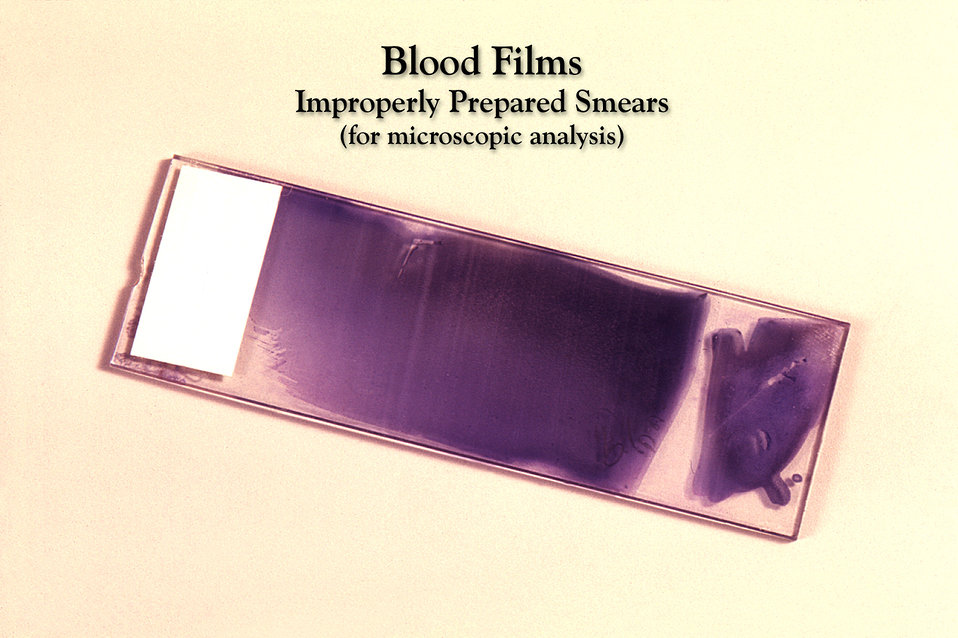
This Giemsa stained slide preparation revealed an unfavorable outcome that was too alkaline, and too thick a specimen.